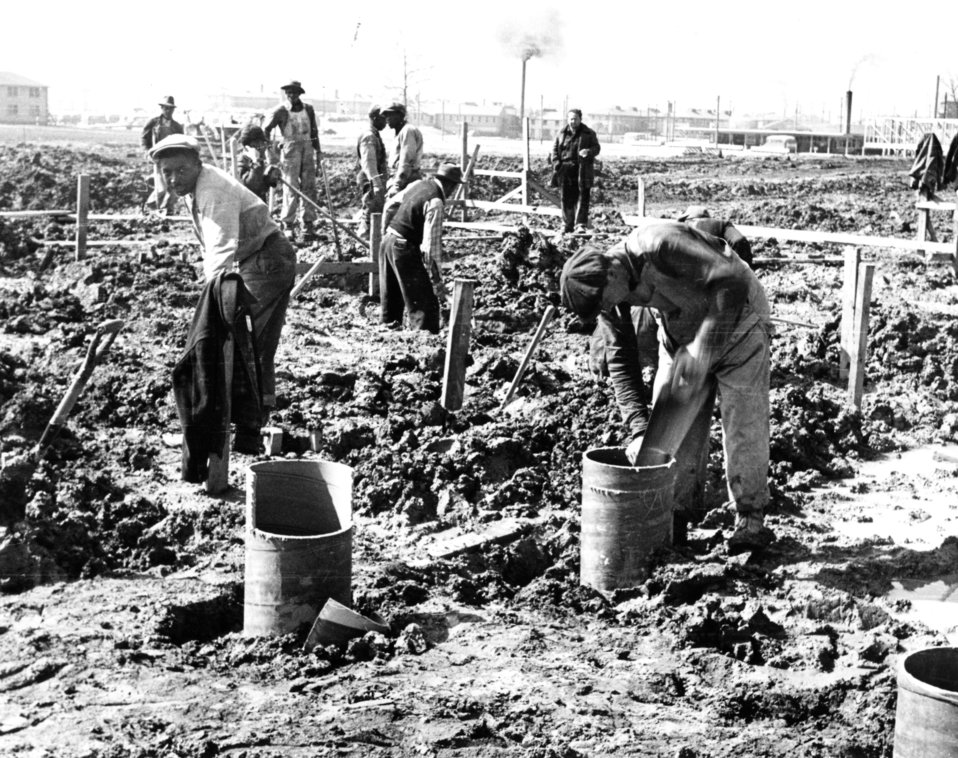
Construction activity at Oak Ridge